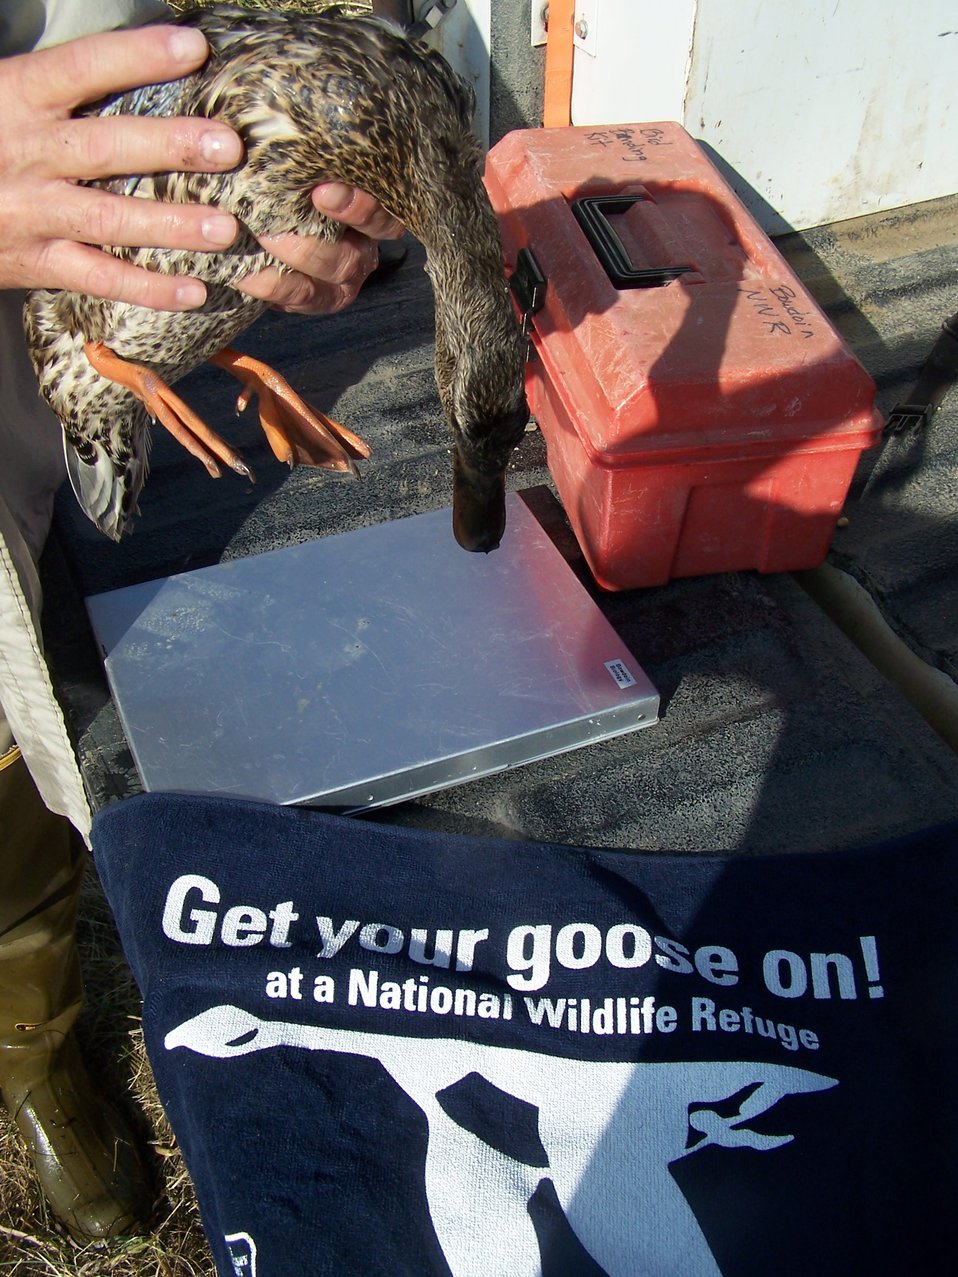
Get Your Goose On! - While Trapping Ducks

Retired Private Lands Biologist, Bruce Barbour, Gets His Goose On while Banding at Bowdoin NWR.